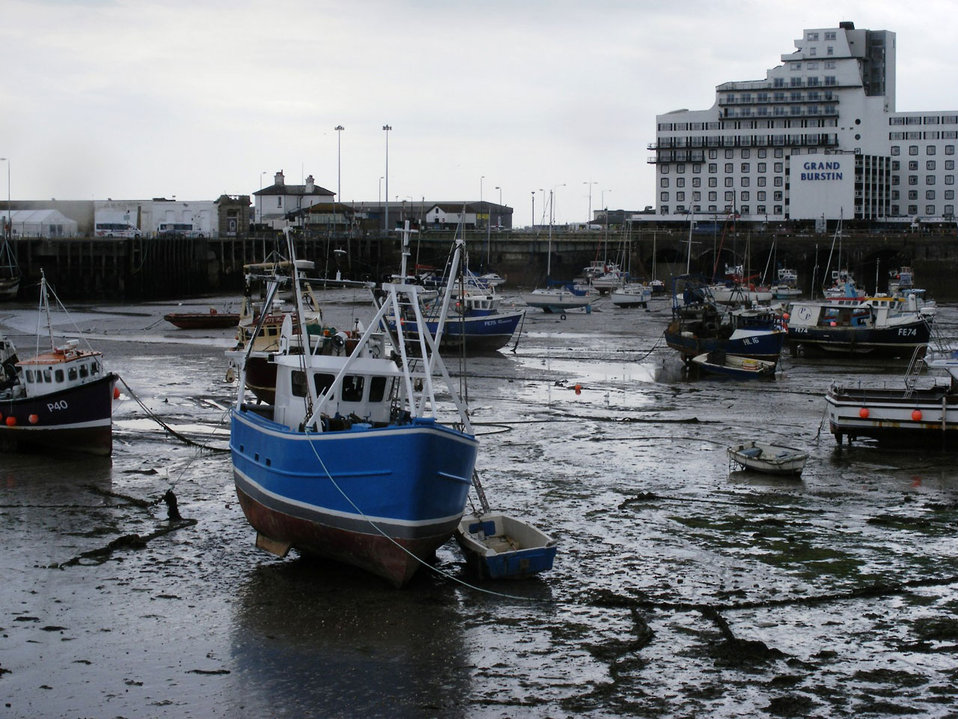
Awaiting the tide

A small fishing boat on a mudflat, dover, kent.